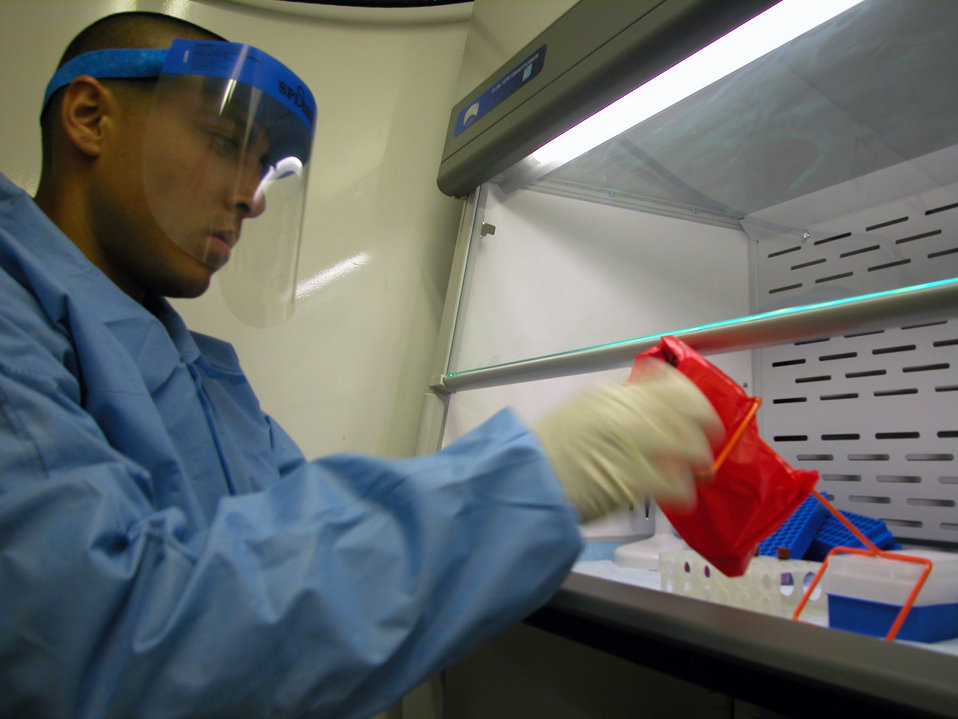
Biological team protects Balad Airmen from bioterrorism

Staff Sgt. Raul Gutierrez sets up a test in the biological augmentation team lab May 11 at Balad Air Base, Iraq. Sergeant Gutierrez is deployed from the Air Force Institute of Operational Health, part of the 311th Human Systems Wing at Brooks-City Base in San Antonio. Sergeant Gutierrez is a a lab technician with the 332nd Expeditionary Medical Group's biological augmentation team.